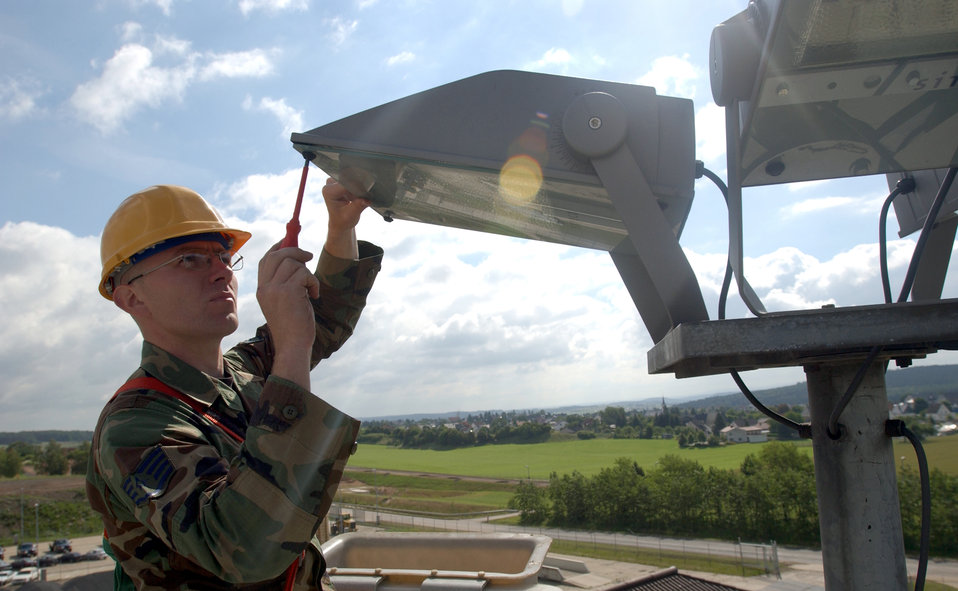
The high light of his day

SPANGDAHLEM AIR BASE, Germany -- Staff Sgt. Mark Jurek gets a bird's eye view of the countryside as he changes a light bulb here. He is assigned to the 52nd Civil Engineer Squadron.